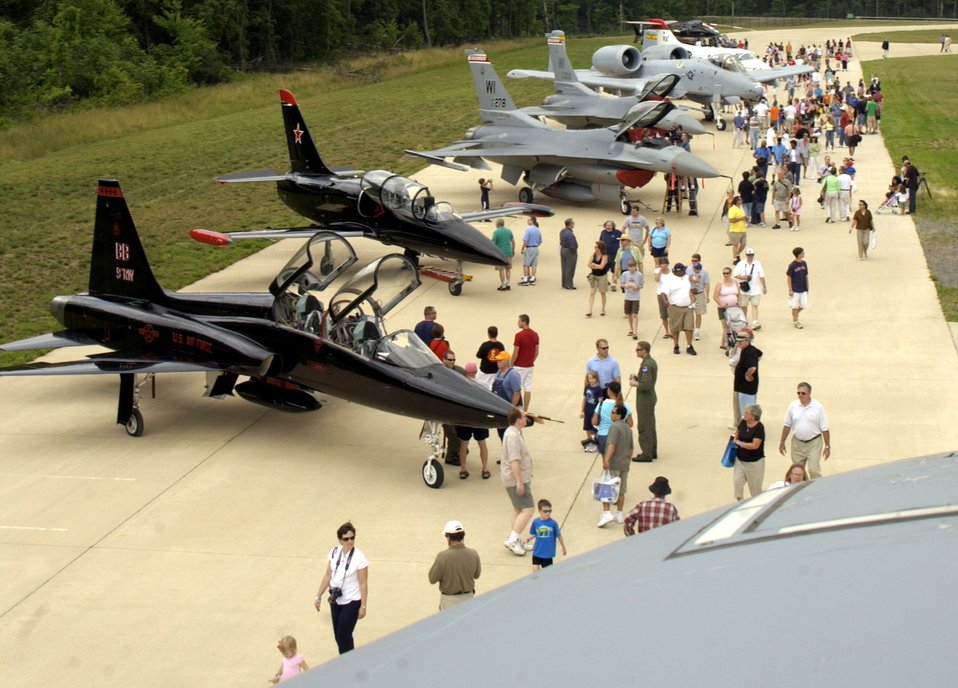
National Air and Space Museum family day wows visitors

Visitors have a chance to speak with Airmen and marvel at aircraft during the